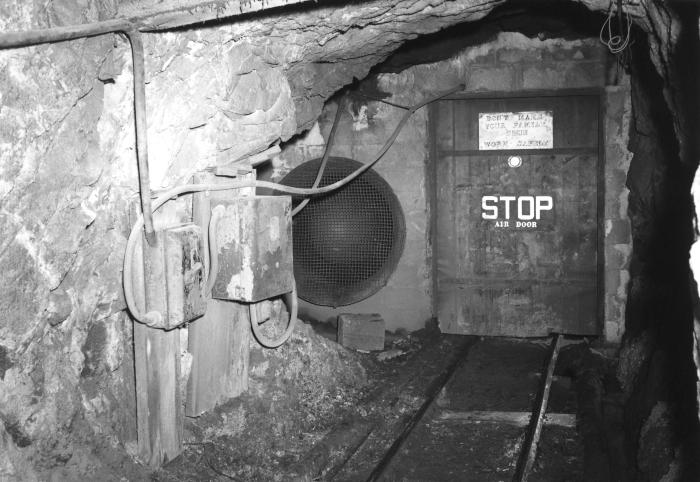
This historical photograph, provided by the Center for Disease Control's (CDC), National Institute for Occupational Safety and Health (NIOSH), depicted the inside of the 'U.S. Smelting, Refining, & Mining Co.' mine shaft in Utah. This mine shaft was at the 3200 foot subterranean level, in the U.S. Section (Intake Side), where towards the left, a 30 HP Joy Axivane� exhaust fan was located. Note the grid covering the fan's intake portal. This fan had a 14,000 cfm flow-through capacity. In the close confines of a subterranean mine such as this one, it's critically important that proper air quality be maintained.